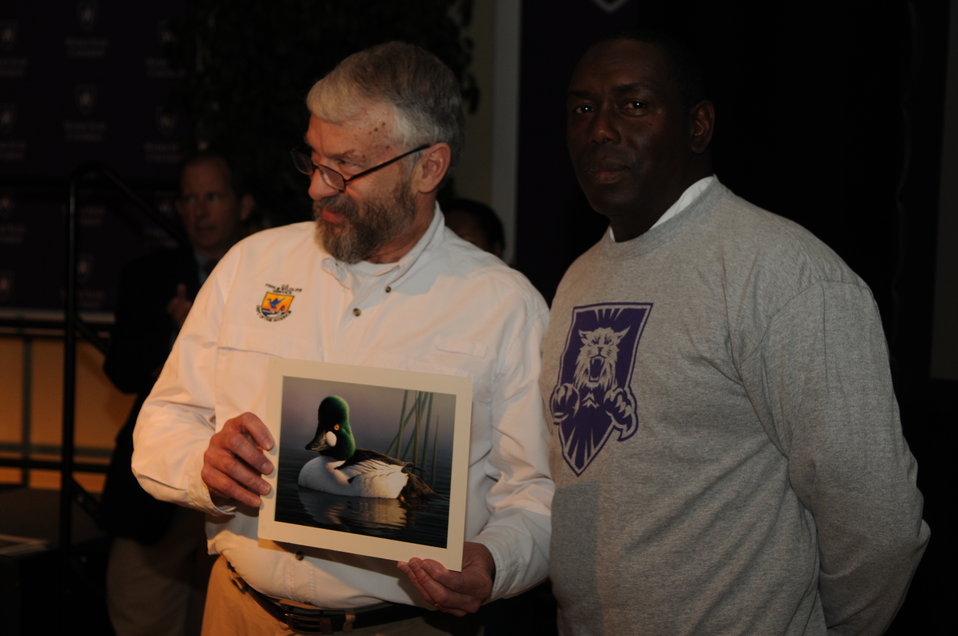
Everyone Loves a Winner

The U.S. Fish & Wildlife Service sponsored the 2012 Federal Duck Stamp Art Contest September 28 and 29 in Ogden, Utah, at Weber State University. A panel of five judges was responsible for choosing the art work used to design the 2013-2014 Migratory Bird Hunting and Conservation Stamp.